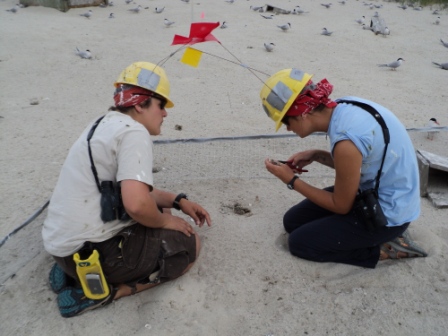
Bird Banding

Interns participate in bird banding at the Eastern Massachusetts National Wildlife Refuge Complex.